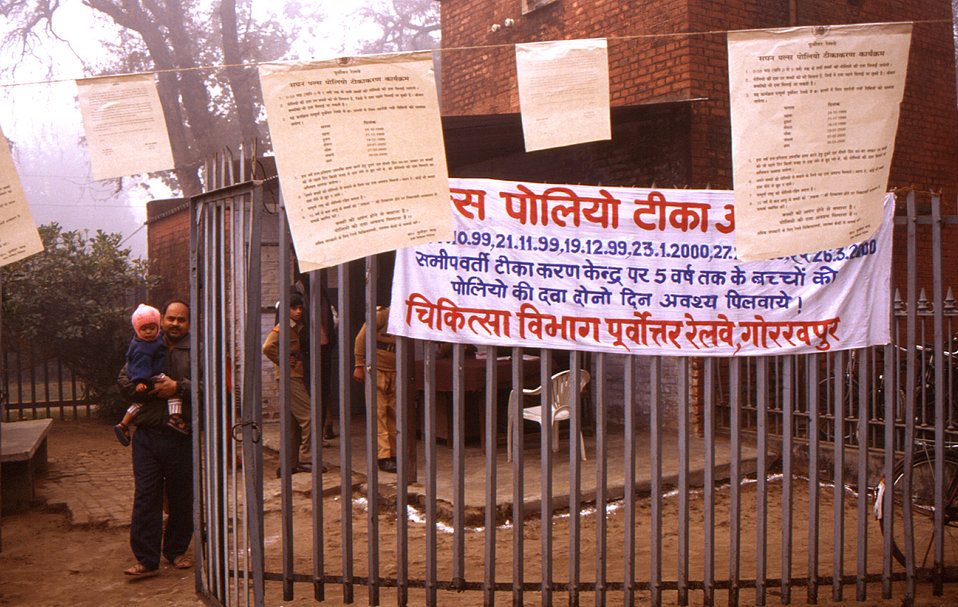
The sign pictured in this 2000 image, was advertising the Pulse Polio Vaccination Campaign. It stated that children up to 5 years of age should be given the polio vaccine, and was posted near the Eastern Railway station in Gorakhpur, India, which was an active supporter of the Polio program.The image was provided by Chris Zahniser, B.S.N., R.N., M.P.H., a Stop Transmission of Polio (STOP) team member and photographer, who was assigned to the state of Uttar Pradesh in northern India, and spent three months working in the Districts of Gorakhpur and Deoria.